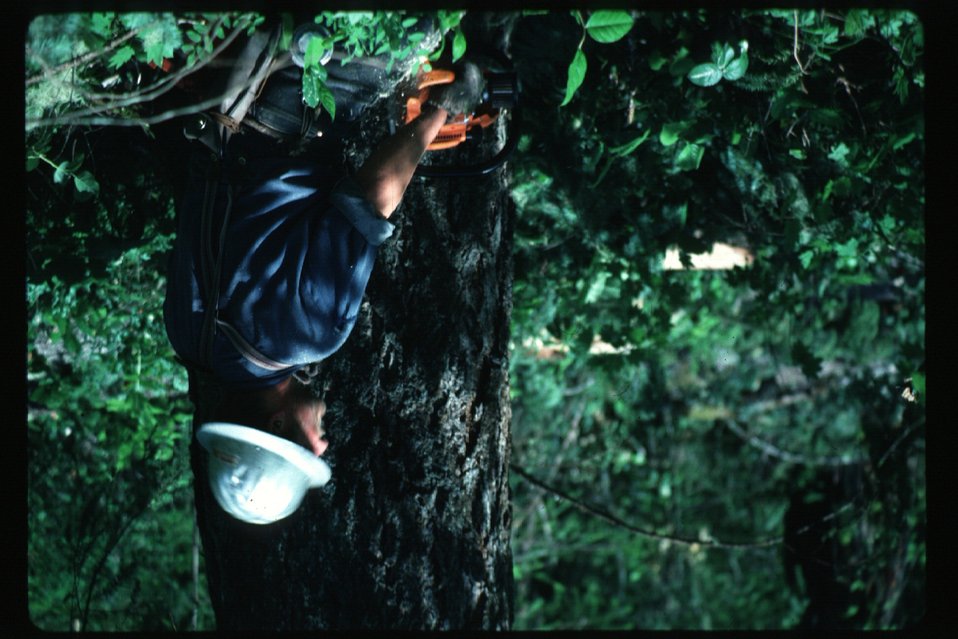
Logging Cutting down tree Forestry Couer d'Alene Field Office UCSC Upper Columbia Salmon Clearwater